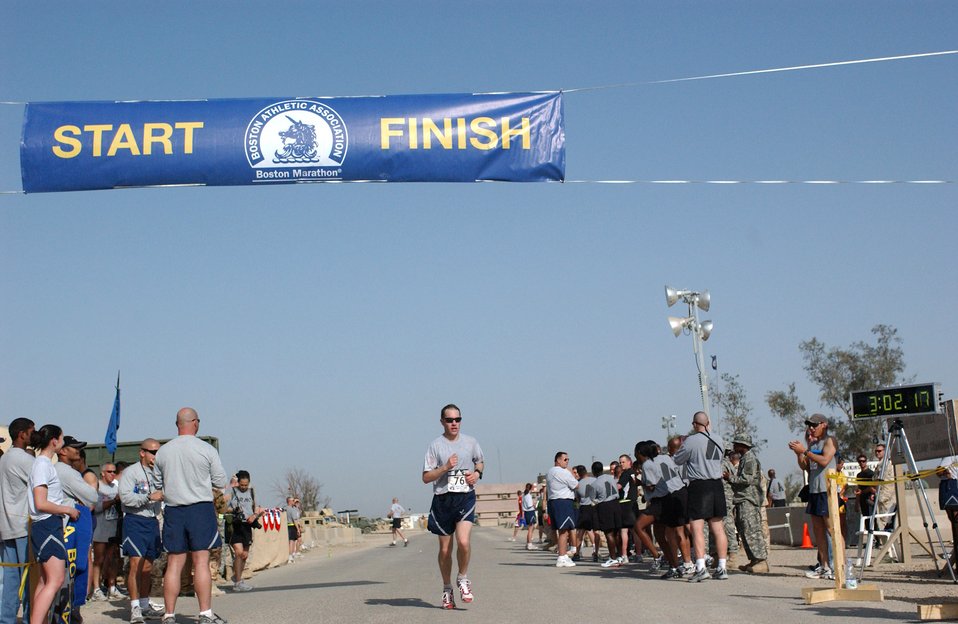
Boston Marathon comes to Iraq

Capt. Casey Jackson crosses the finish line with a time of 3 hours, 2 minutes, 17 seconds to take second place in the 2nd Annual Boston Marathon at Ali Base, Iraq, on Saturday, April 15, 2006. Captain Jackson is deployed to the 407th Expeditionary Operations Support Squadron from Ramstein Air Base, Germany.